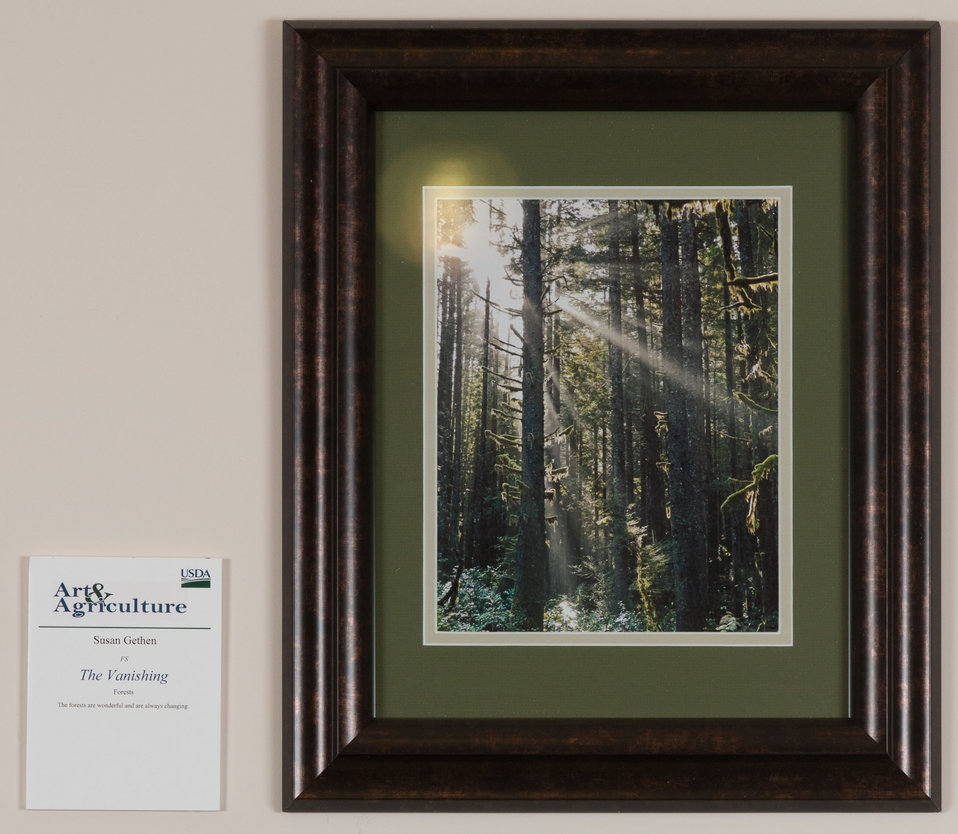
Online Viewer's Choice entries of the 2013 Art & Agriculture, Tuesday, July 9, 2013, in the South Building, Washington, D.C. Themes were expressed by employees from across the department and the contest was open to full-time and part-time USDA employees. Winning artwork will be displayed till the end of the year. U.S. Artistic expression is a creative outlet that is vital for an individual to grow and develop.